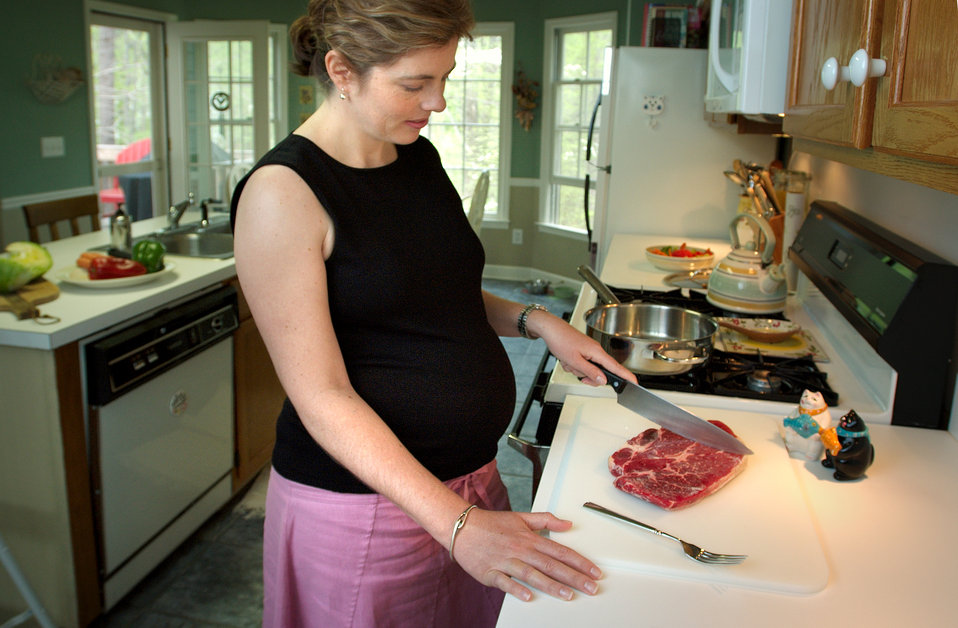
This photograph showed a pregnant woman using a kitchen knife to cut raw meat before cooking. Pregnant women or immunosuppressed patients can be at greater risk in acquiring foodborne illnesses, and need to take additional precaustions when handling raw food products.Cook meat, poultry and eggs thoroughly. Using a thermometer to measure the internal temperature of meat is a good way to be sure that it is cooked sufficiently to kill bacteria. For example, ground beef should be cooked to an internal temperature of 160o F. Eggs should be cooked until the yolk is firm.